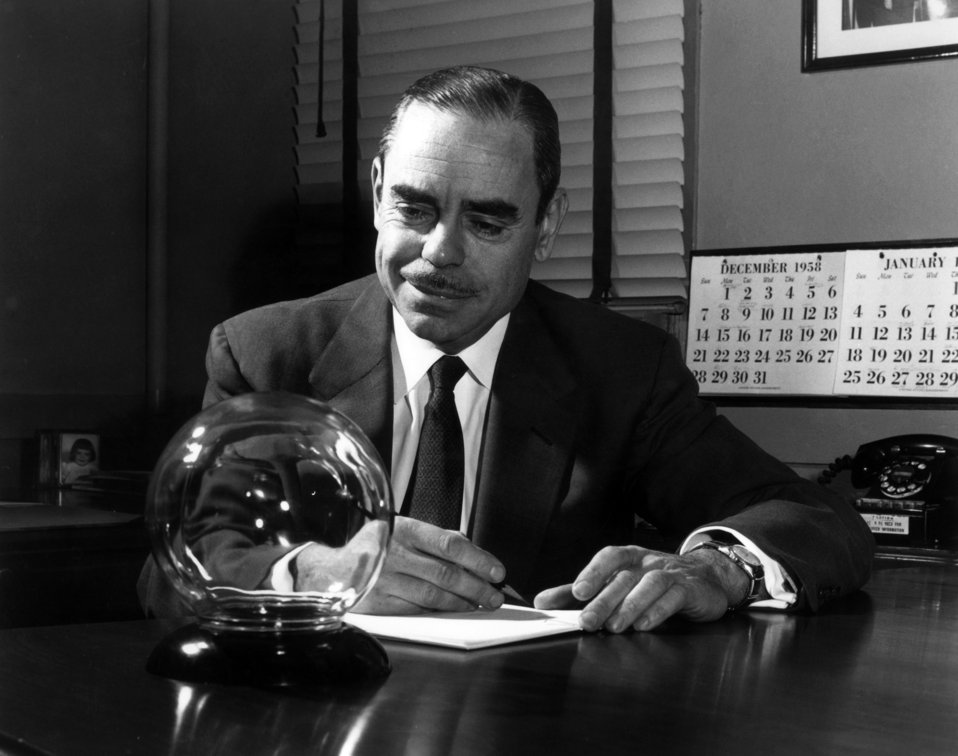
AEC Manager Sam Sapirie and Crystal Ball Oak Ridge

59-216 DOE photo Ed Westcott 1-1959 Oak Ridge Tennessee